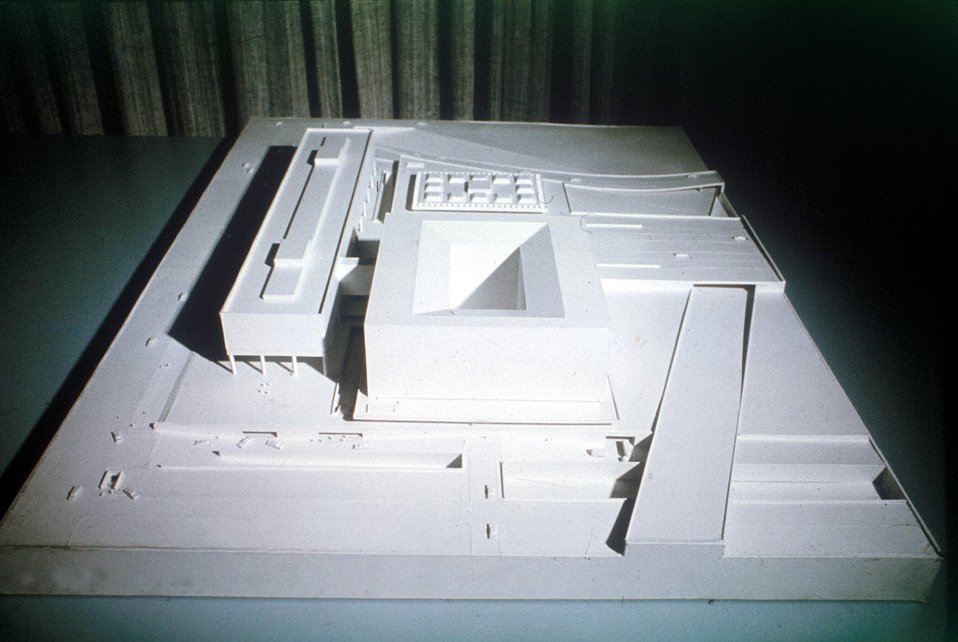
Model Federal Office building No. 5 Washington DC